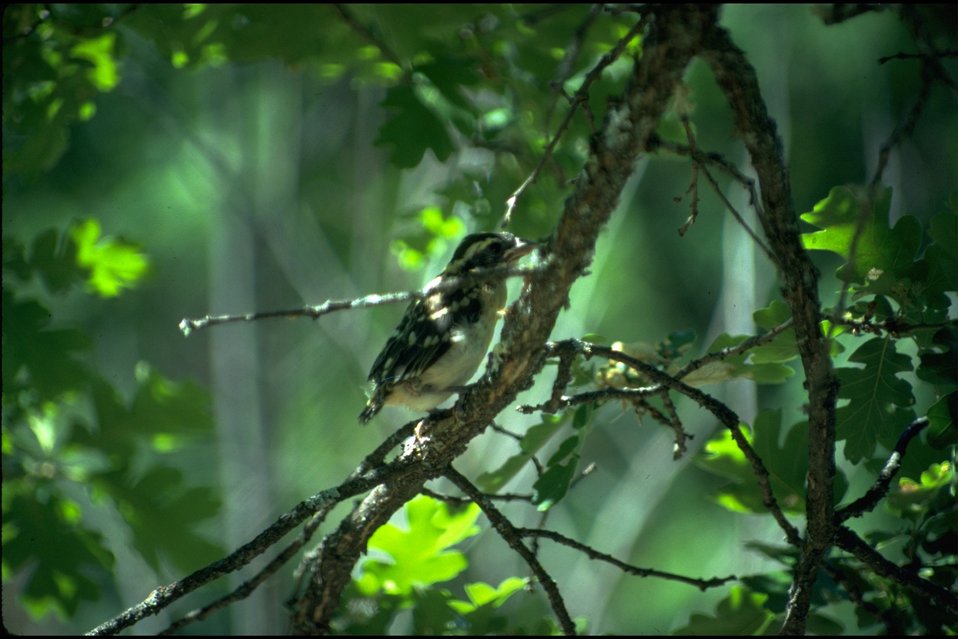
Rogue River - Osprey.